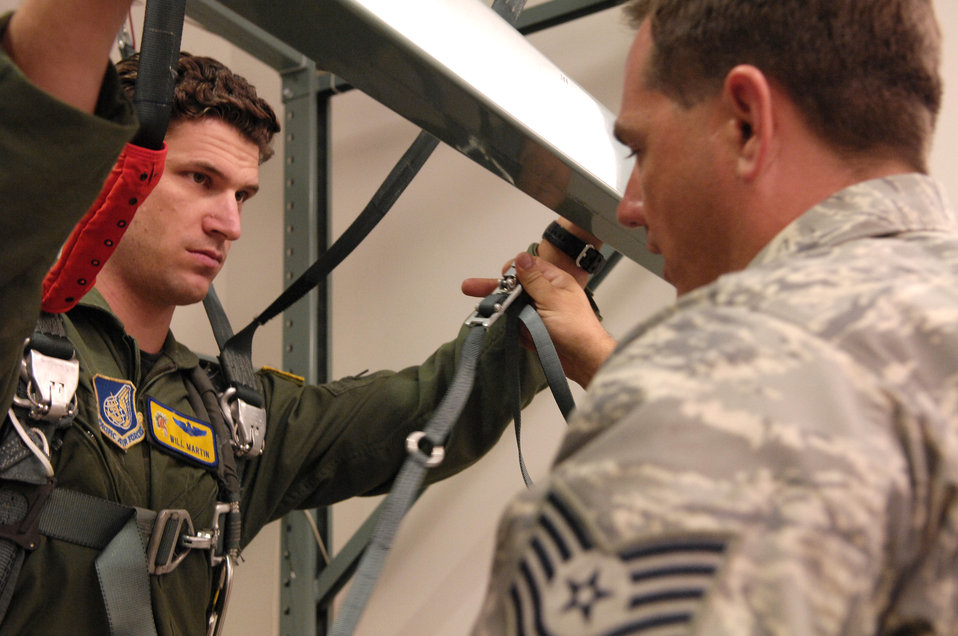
SERE Instructors

Maj. Will Martin, a pilot with the 535th Airlift Squadron at Hickam Air Force Base, Hawaii, listens as Tech. Sgt. Sherwood Brown provides guidance for using the parachute simulator during a refresher parachute training class Jan 24. Aircrews require annual non-ejection parachute training so they are current according to Air Force instructions. Sergeant Brown is a survival, evasion, resistance, escape, or SERE, instructor with the 15th Airlift Wing at Hickam.